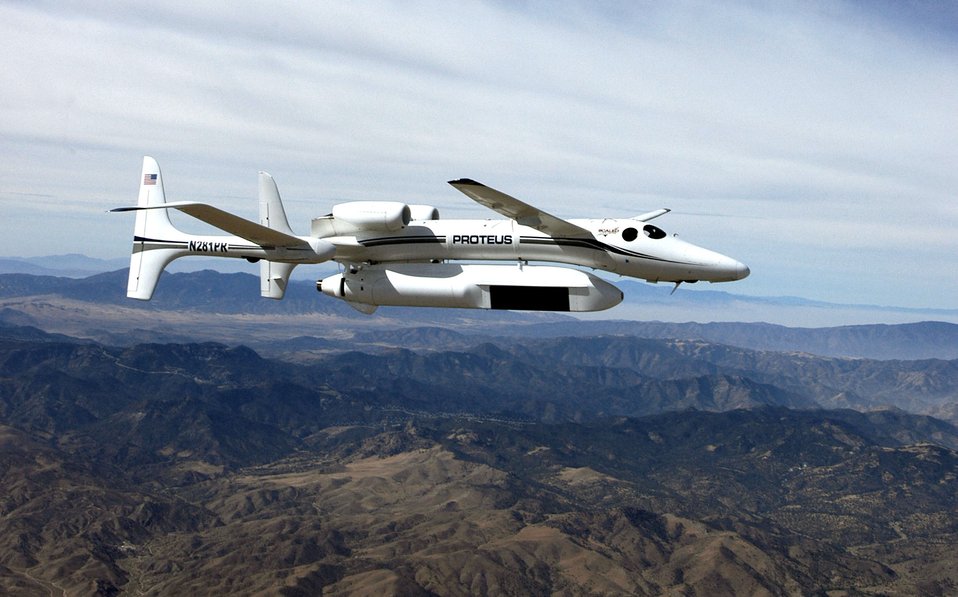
First flight

A Proteus aircraft flies over Southern California carrying the Global Hawk variant of the new Multi-Platform Radar Technology Insertion Program radar. This is the first flight test of the state-of-the-art radar system, which will be incorporated onto the Global Hawk.